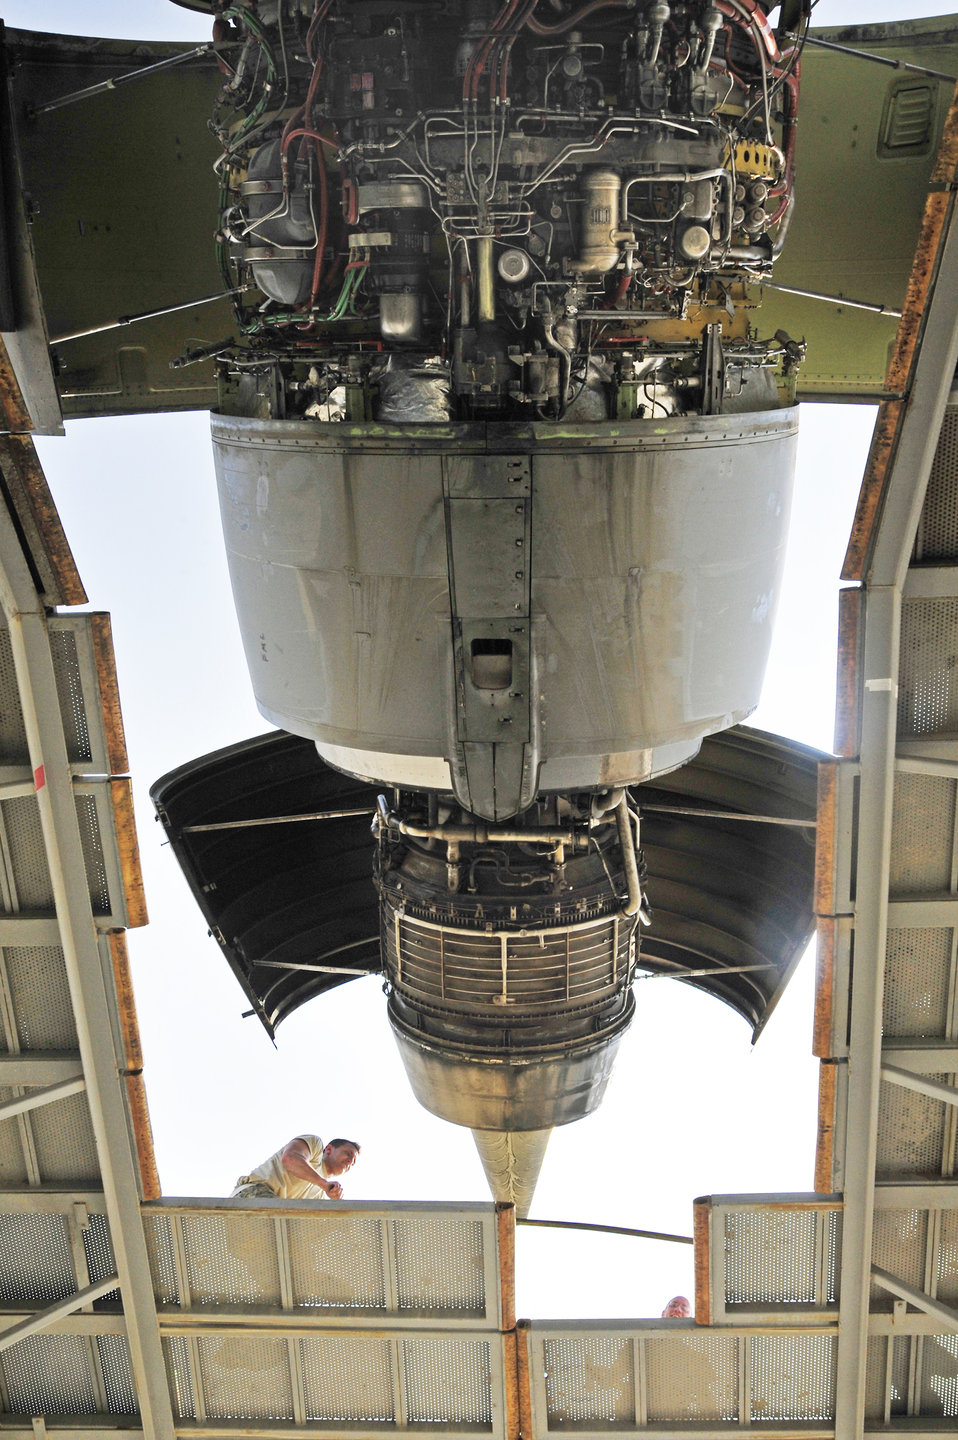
Things are looking up...

Staff Sgt. Nick Frazier configures a maintenance stand in preparation to change the No. 2 engine on a KC-10 Extender Oct. 28, 2009, at an air base in Southwest Asia. Sergeant Frazier is a jet propulsion systems mechanic with the 380th Expeditionary Aircraft Maintenance Squadron, and deployed from Travis Air Force Base, Calif.